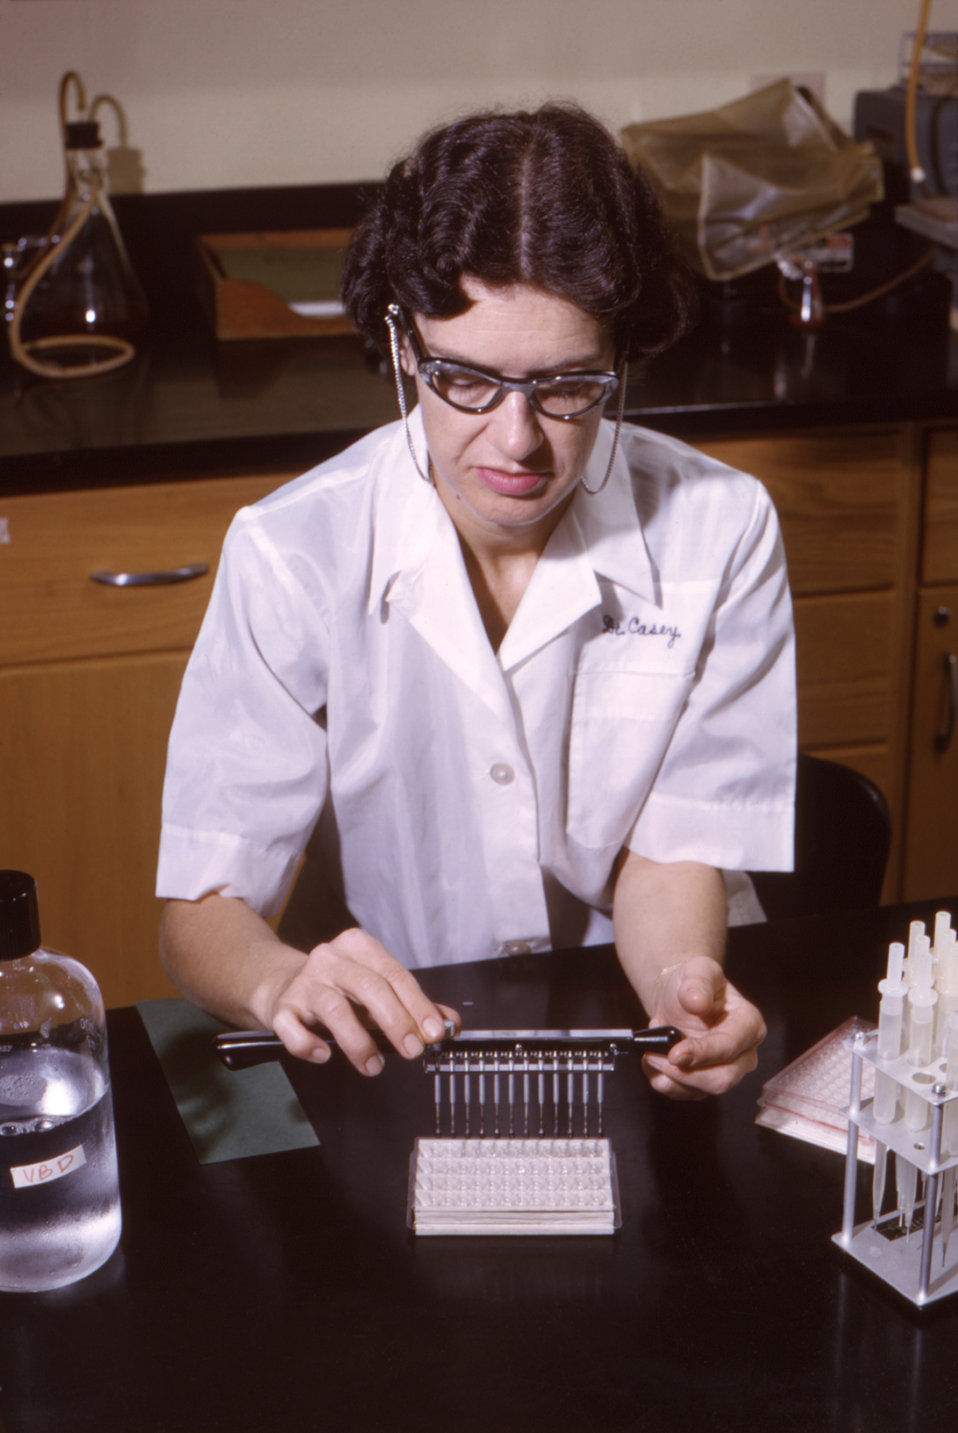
This historic 1965 image depicted Centers for Disease Control's staffer, Dr. Helen Casey while she was using the automatic transfer apparatus in order to perform a micro-titer technique.